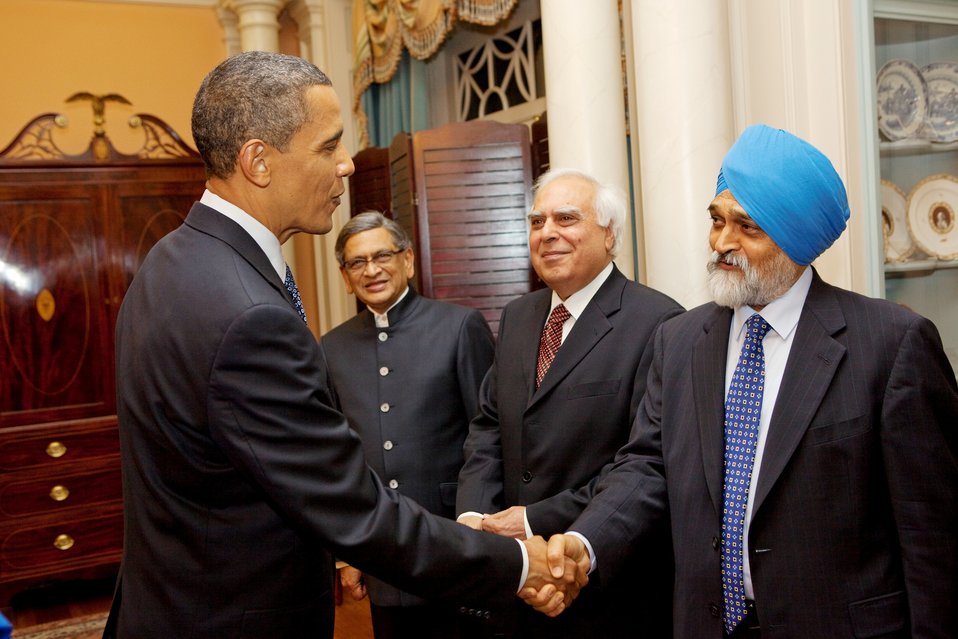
President Obama Shakes Hands With Dr. Montek Singh Ahluwalia

U.S. President Barack Obama shakes hands with Dr. Montek Singh Ahluwalia, Deputy Chairman Planning Commission of India, at the U.S.-India Strategic Dialogue reception at the U.S. Department of State in Washington, D.C., on June 3, 2010.